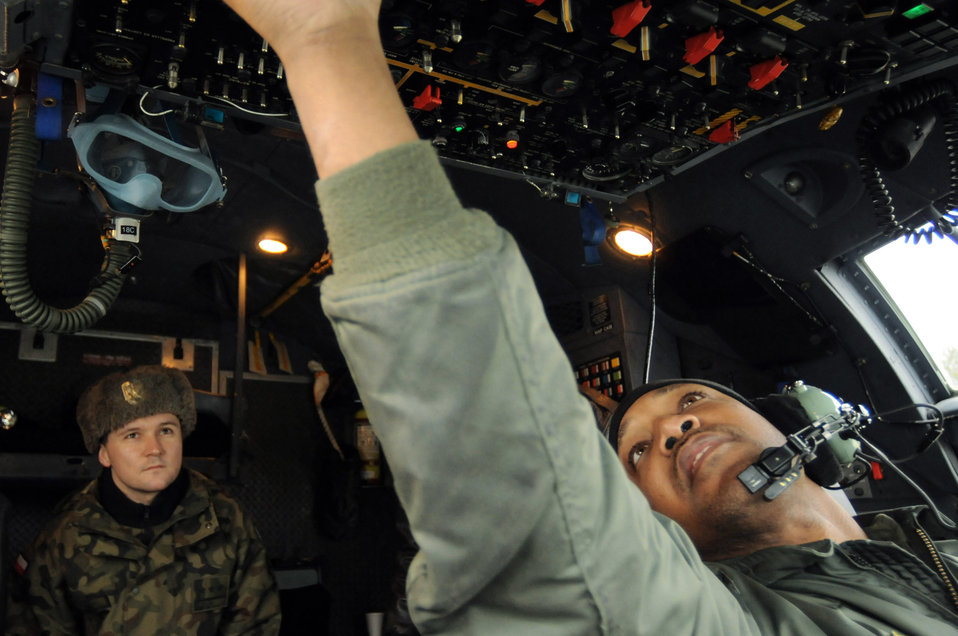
Ramstein Airmen show C-130 capabilities to Polish military

Staff Sgt. Robert Hayes (right) goes through his C-130 Hercules preflight checklist as a member of the Polish air force looks on Jan. 29 at Powidz Air Base, Poland. The Polish air force will soon be adding the C-130 to their aircraft inventory, allowing them greater cargo movement capabilities. Sergeant Hayes is an 86th Airlift Wing flight engineer from Ramstein Air Base, Germany.